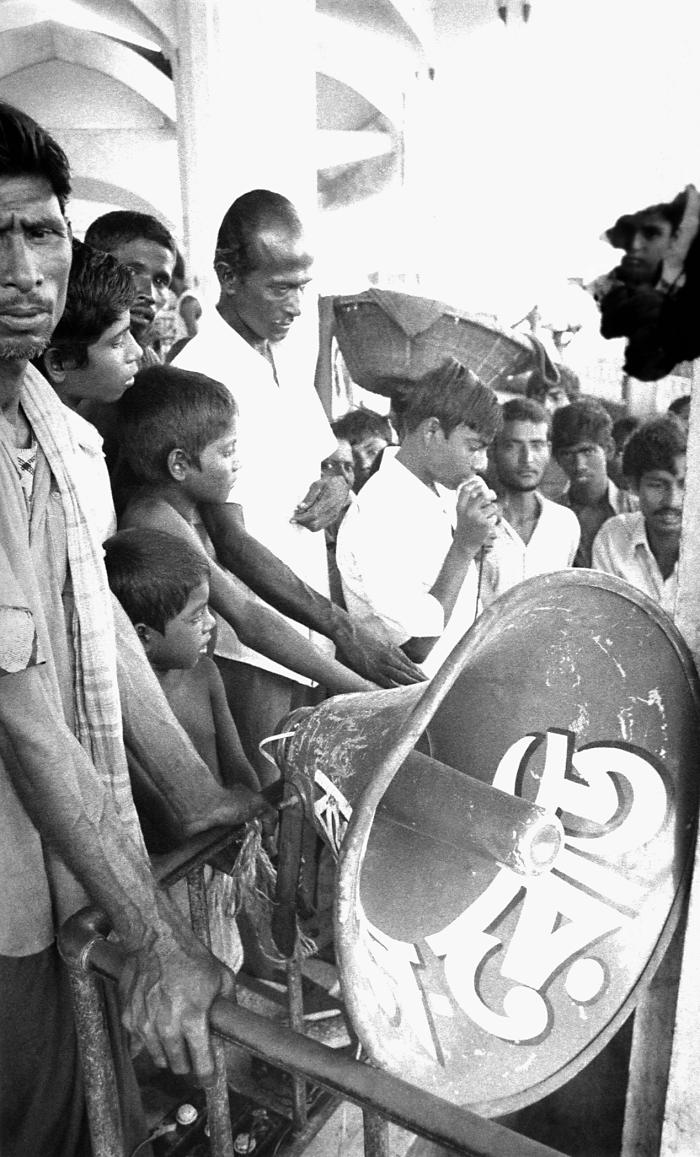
This local smallpox eradication team volunteer was using a mounted public address (PA) system in order to notify a village crowd of the rewards associated with reporting a confirmed smallpox case. If, indeed, a case was reported, from no matter the source, it was investigated fully, and if confirmed as a smallpox case by an epidemiologist, a reward was paid to the informant, no matter the age, and it was subsequently entered into the 'Containment Book'. The Containment Book was a ledger, which recorded all of the names of anyone living in, or within one half of a mile from a smallpox case, and subsequently all those listed were vaccinated against smallpox. Those vaccinated were followed until a 'successful' vaccination was observed.